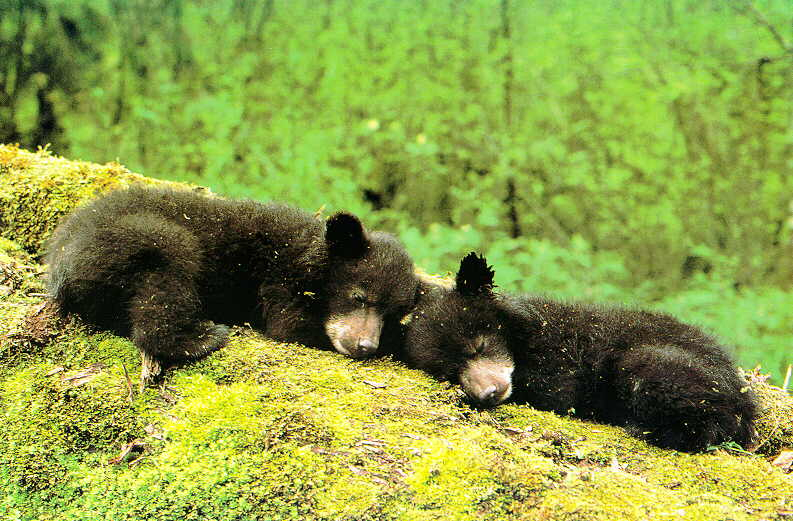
black bear cubs

Southeast Region